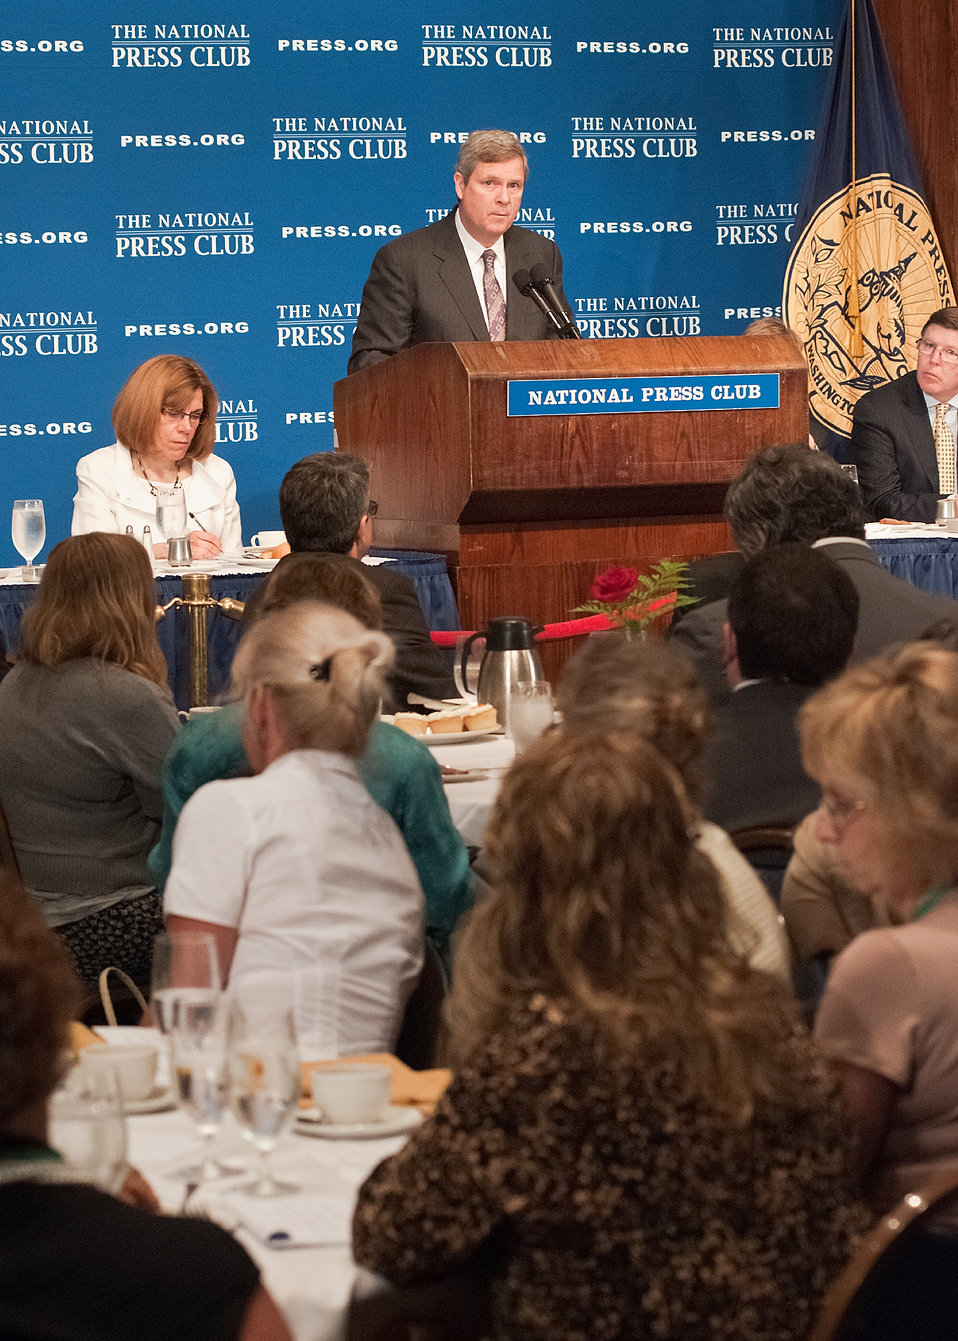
Agriculture Secretary Tom Vilsack spoke to journalists and national agriculture leaders about Innovation in American Agriculture, Sustainable Solutions to Help Feed the World at the National Press Club in Washington, DC, Monday, June 13, 2011 prior to attending the G20 Summit in France with global agriculture leaders. Secretary Vilsack mentioned in his speech, 'As we look to the future, this challenge grows even more stark. The global population is on the rise and strong economic growth in developing countries is expanding middle classes and increasing demand for agricultural products. We will have to increase food production by 70 per cent to feed a larger, richer global population of 9.3 billion by 2050. What's more, agriculture will play a role in meeting the growing demand for energy – which is expected to increase by more than 40% by 2035.”